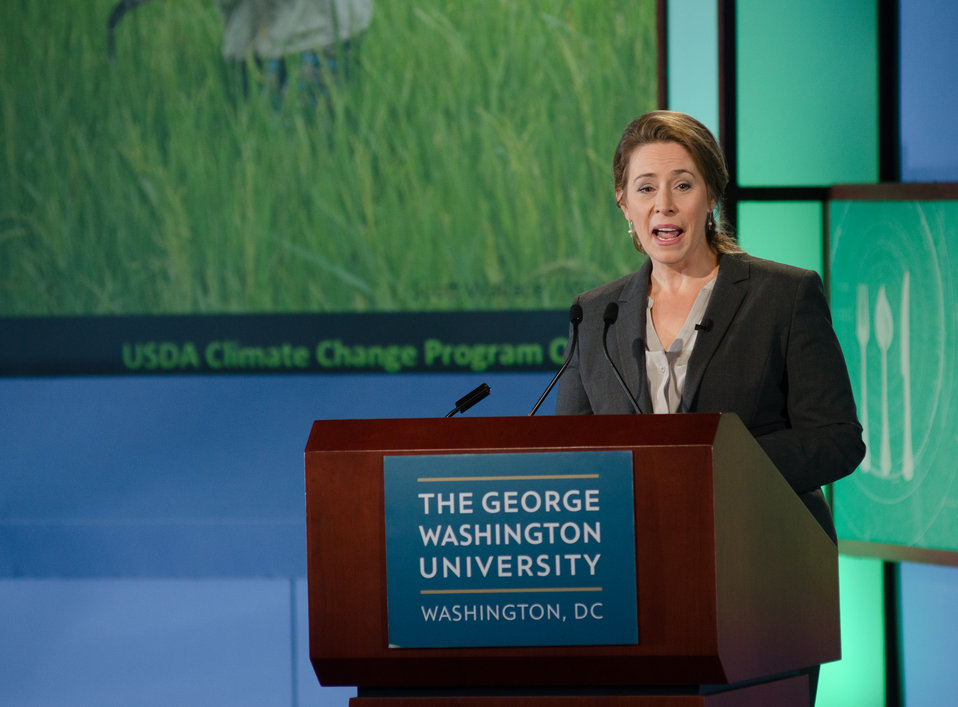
Margaret Walsh, Ph.D., Senior Ecologist Climate Change Program Office at the U.S. Department of Agriculture (USDA) speaking at the Feeding the Planet Summit of leaders from agriculture, business, finance, academia, Non Governmental Organization, government and media, along with a large contingent of college students to engage around promising innovations in global agriculture and food security. The Summit spotlights transformation and scalable developments in policy, practices and technologies with special attention to related issues of gender, climate change and urbanization at The George Washington University in Washington, DC, on Wednesday, Oct. 31, 2013.